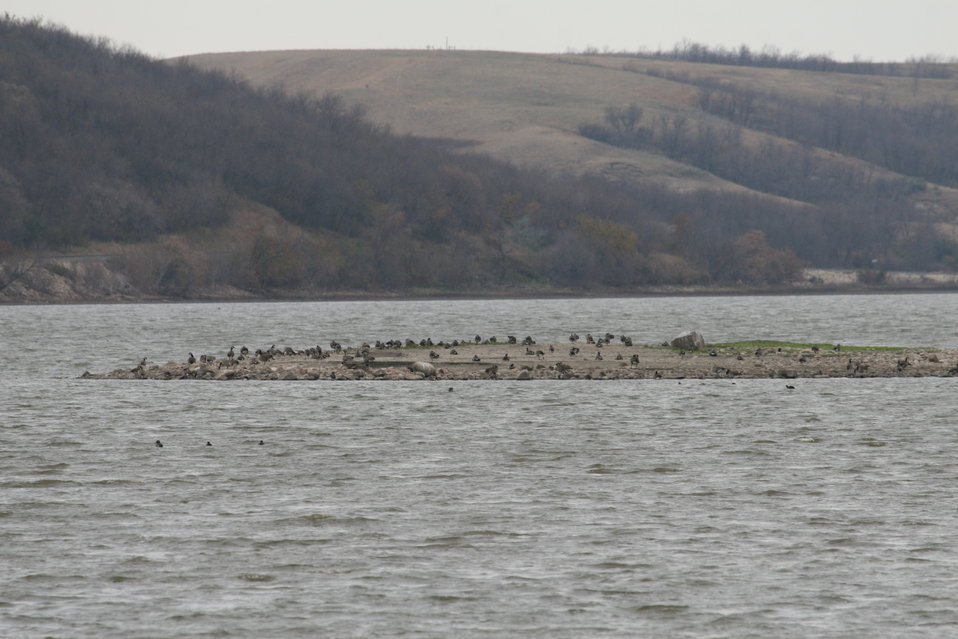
Fall on the Refuge - Nesting Islands

These islands provide safe nesting habitat for waterfowl in the spring and good resting areas in the fall.